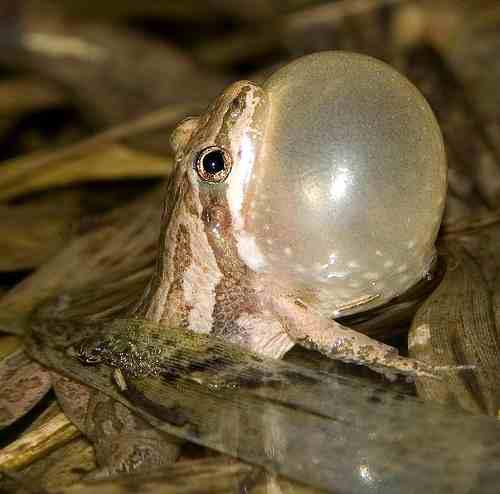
Western Chorus Frog

Bear River Migratory Bird Refuge, Utah
March 2012
USFWS

Another sure sign of Spring...first chorus of Western Chorus frogs were singing late yesterday afternoon from the wetlands around the Education Center parking lot at Bear River Migratory Bird Refuge!